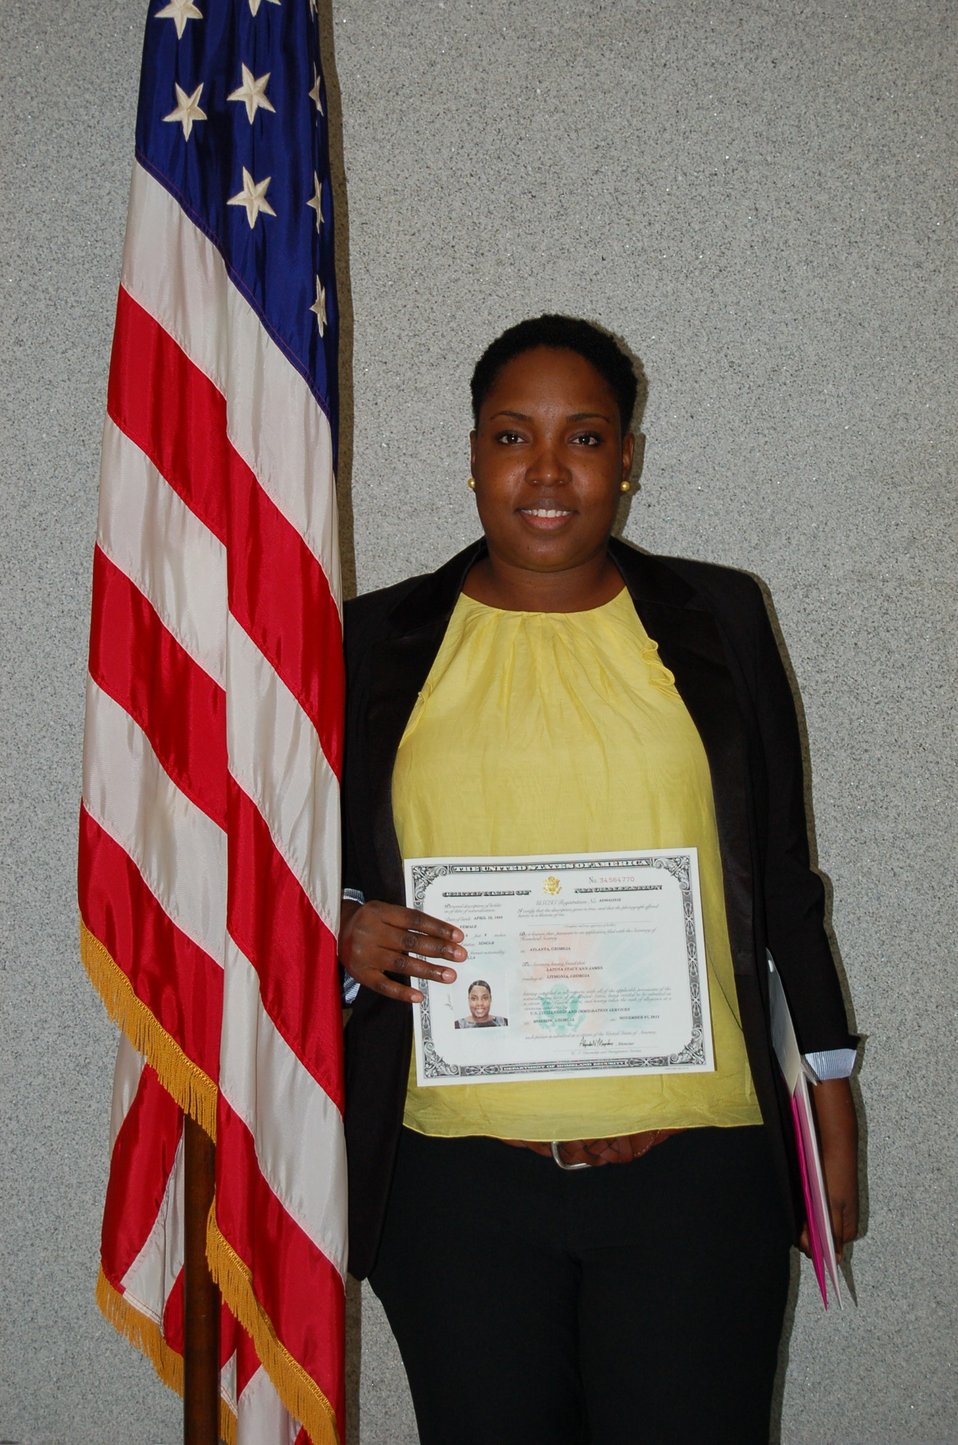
New Citizens